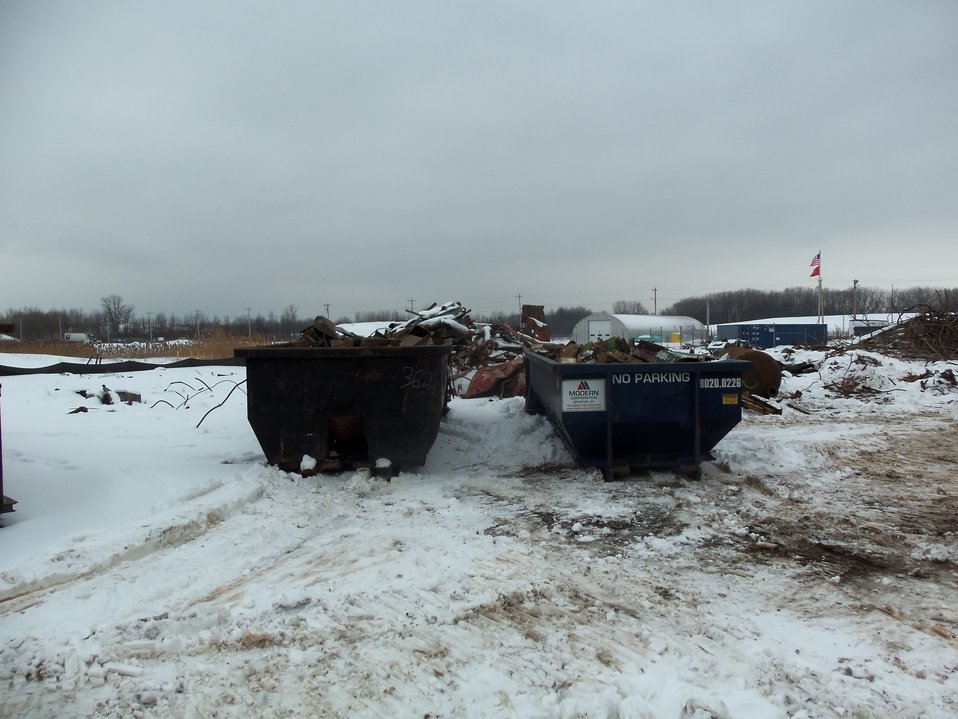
DEBRIS CONTAINERS FROM BUILDING 401

Activities from the Niagara Falls Storage Site, which is associated with the former Lake Ontario Ordnance Works. Formerly Utilized Sites Remedial Action Program (FUSRAP), a program initiated in 1974 to identify, investigate and clean up or control sites that were part of the Nation's early atomic energy and weapons program. Activities at the sites that are eligible for FUSRAP were conducted by Manhattan Engineer District (MED) or the Atomic Energy Commission (AEC), both predecessors of the Department of Energy (DOE). The U.S. Army Corps of Engineers was assigned management of FUSRAP by Congress in 1997.